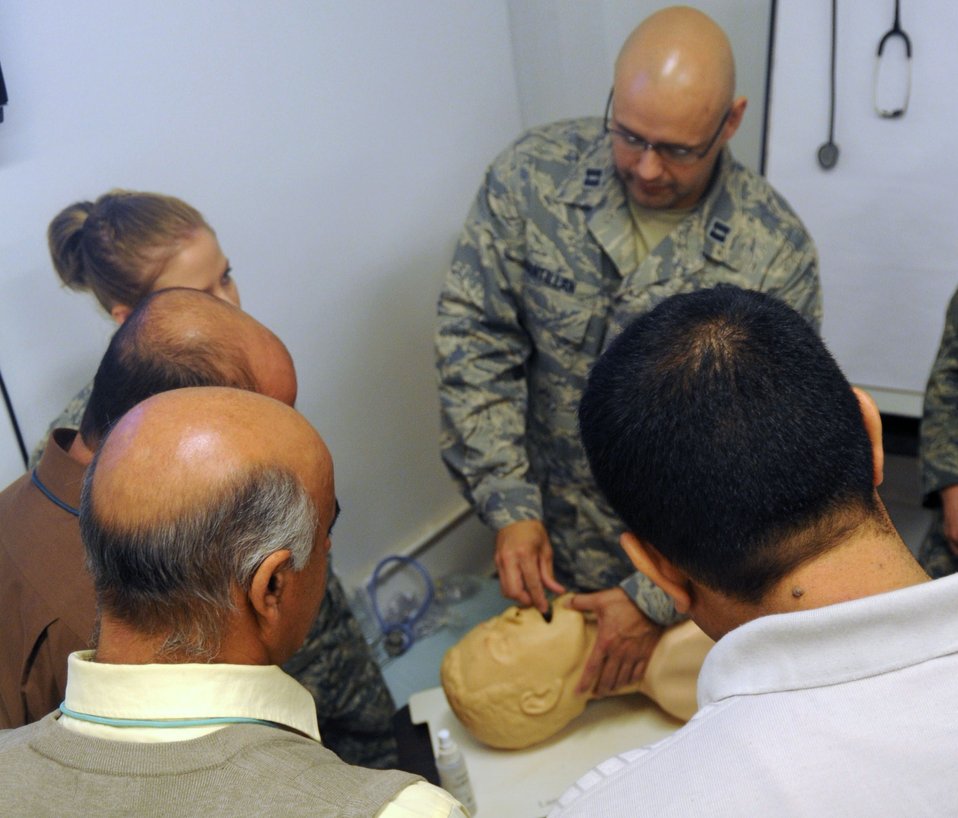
Air Force nurses welcome Iraqi colleagues, share skills

Capt. Fredrick Santillan teaches airway techniques to Iraqi nurses and nursing students Dec. 9, 2009, as part of the Iraqi Nursing Partnership Program conducted monthly at the Air Force Theater Hospital at Joint Base Balad, Iraq. The students begin each class with a lecture covering the day's primary topic and then complete a hands-on portion, when they put those teachings into practice. Captain Santillan is a 332nd Expeditionary Medical Group registered nurse.